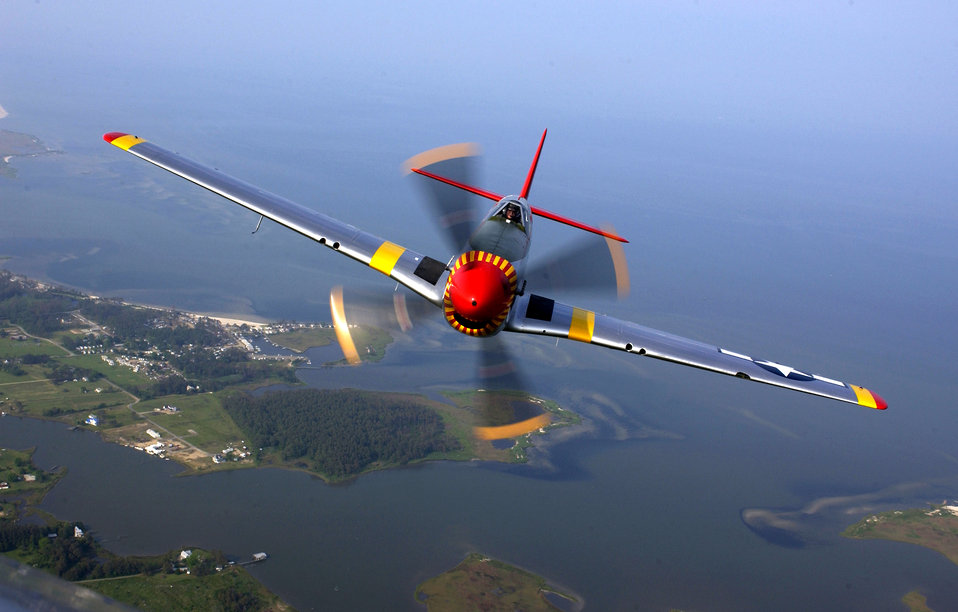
Air power demonstration

OVER VIRGINA -- Ed Shipley flies a P-51 Mustang in a heritage flight during an air show at Langley Air Force Base, Va., on May 21.